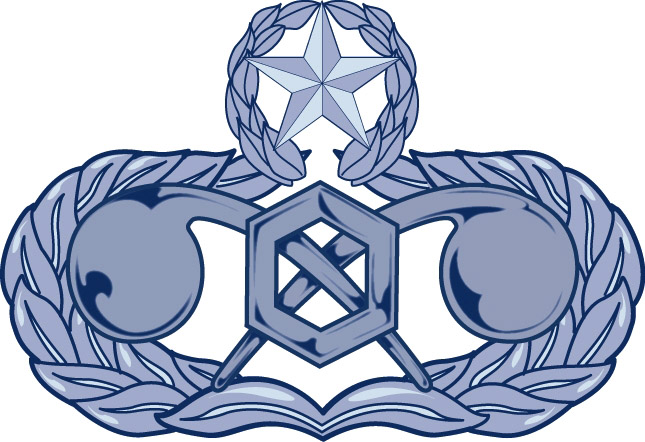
New civil engineer readiness occupational badge.